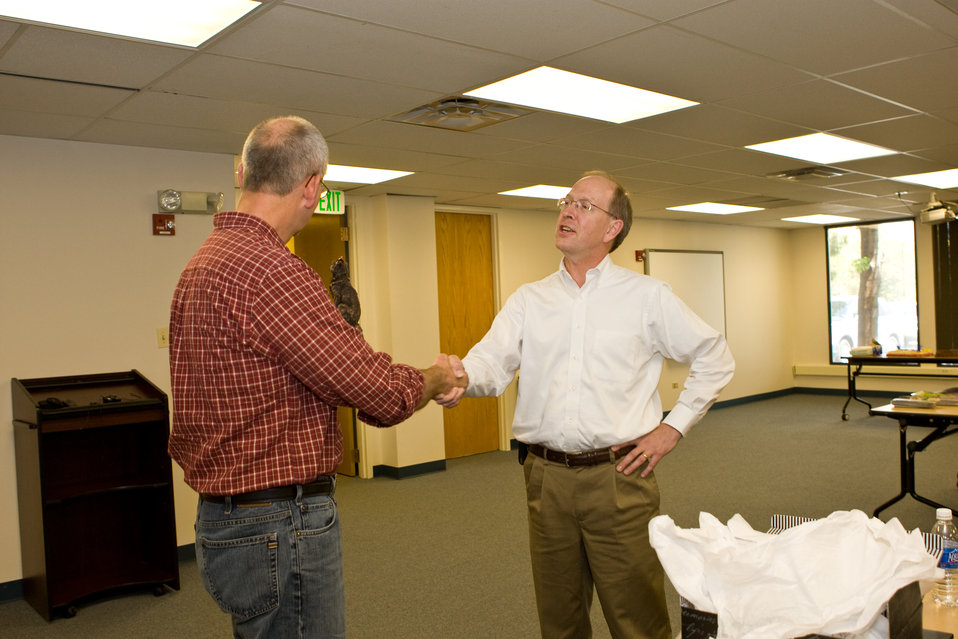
Assistant Director of Endangered Species Program, Gary Frazer, Presents Ed Bangs with an Award

On May 23rd, 2011 The U.S. Fish and Wildlife Service Mountain-Prairie Region honored three of the most influential individuals in wolf recovery in the Northern Rocky Mountains: Ed Bangs, Steve Fritts, and Margot Zallen. Ed Bangs started the event with an hour-long presentation, “Wolf Conservation: The Good, The Bad, and The Ugly.”

Following the presentation, Regional and National leadership recognized the imminent retirement of Ed, Steve, and Margot with a variety awards for their contributions.